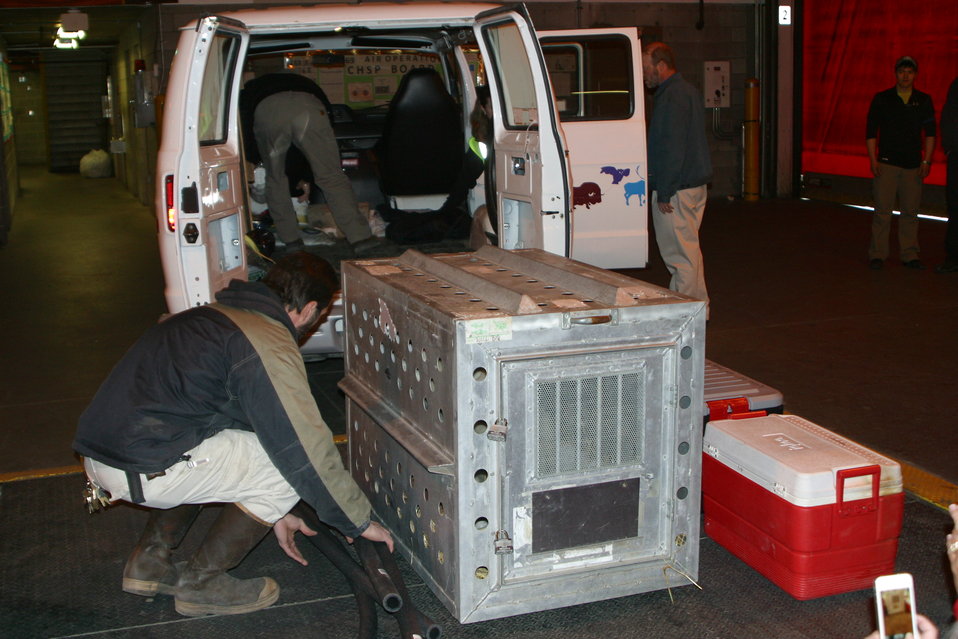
kali crate